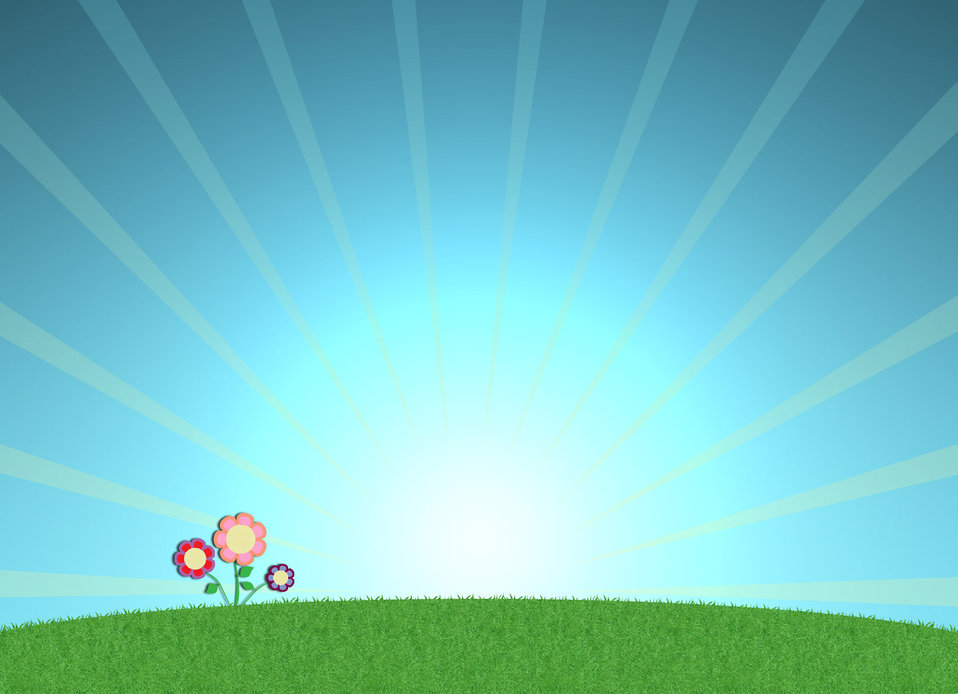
Spring background

5x7 spring themed background.